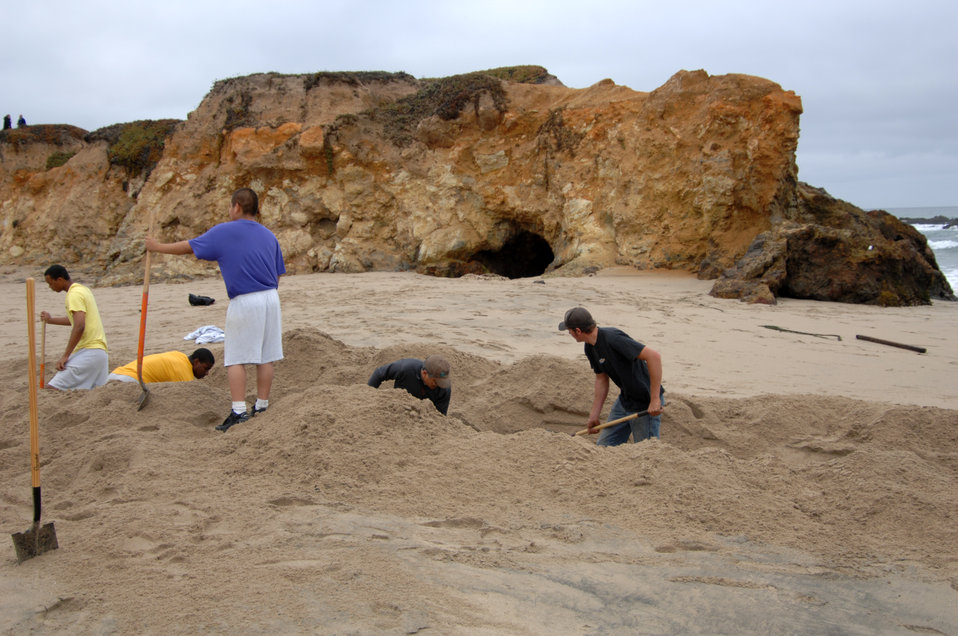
Pescadero Breach 7